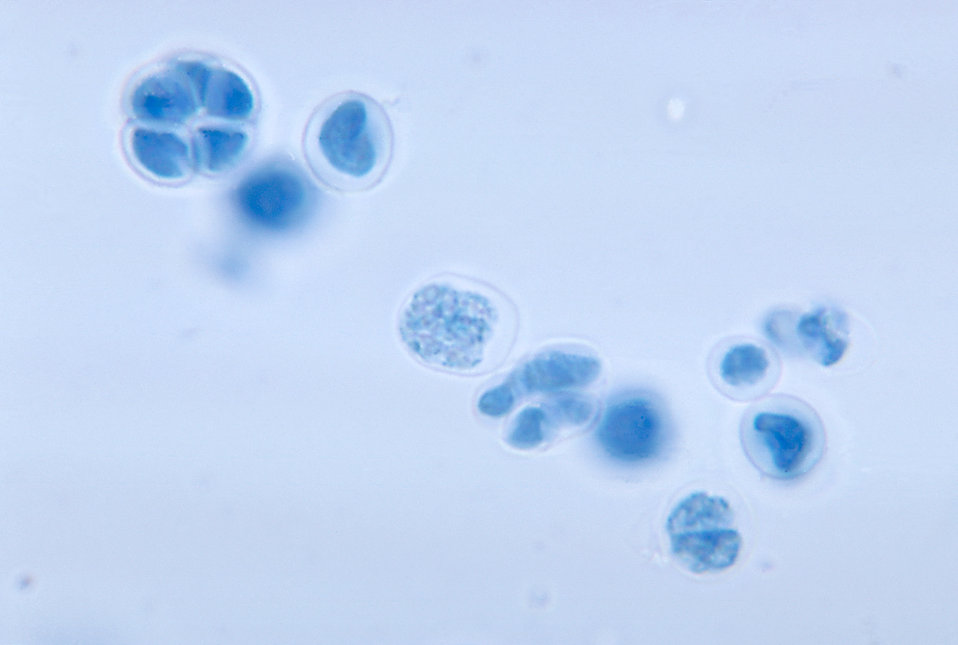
This photomicrograph confirms the presence of Prototheca wickerhamii, an achlorophyllic algae.